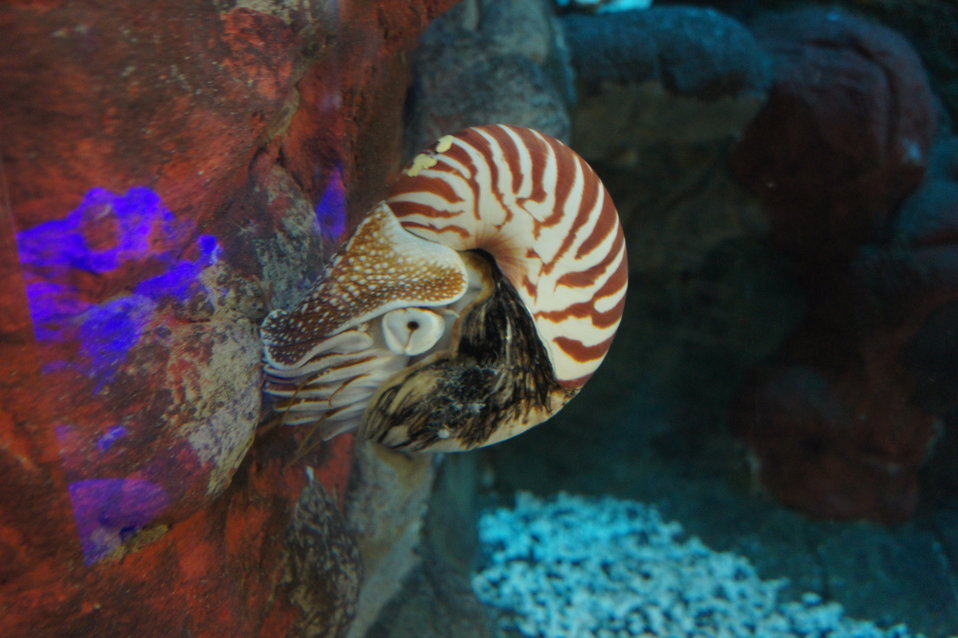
Chambered Nautilus at the Smithsonian National Zoo

The chambered nautilus! This is the magnificent species that Josiah Utsch and Ridgely Kelly, co-founders of www.savethenautilus.com, are working hard to conserve.